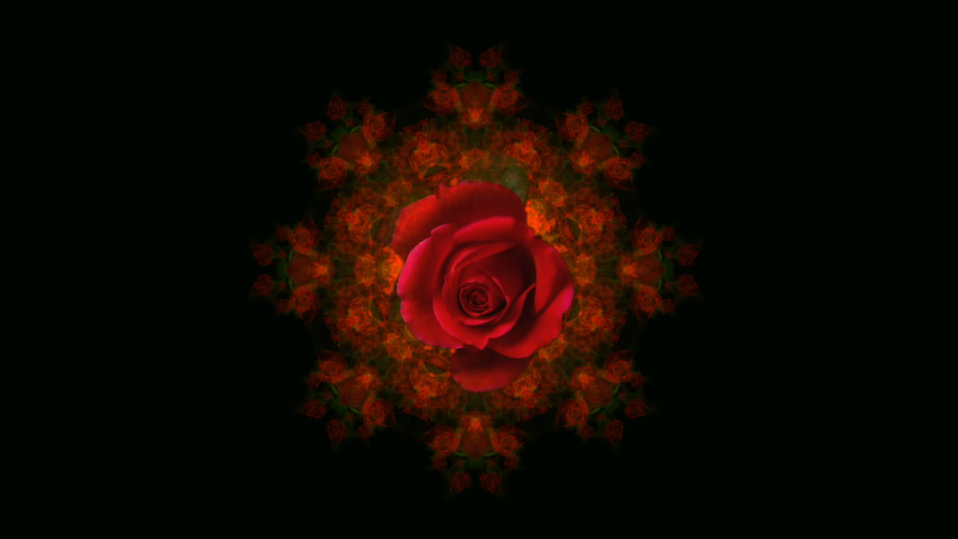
Rosebud

Open rosebud.